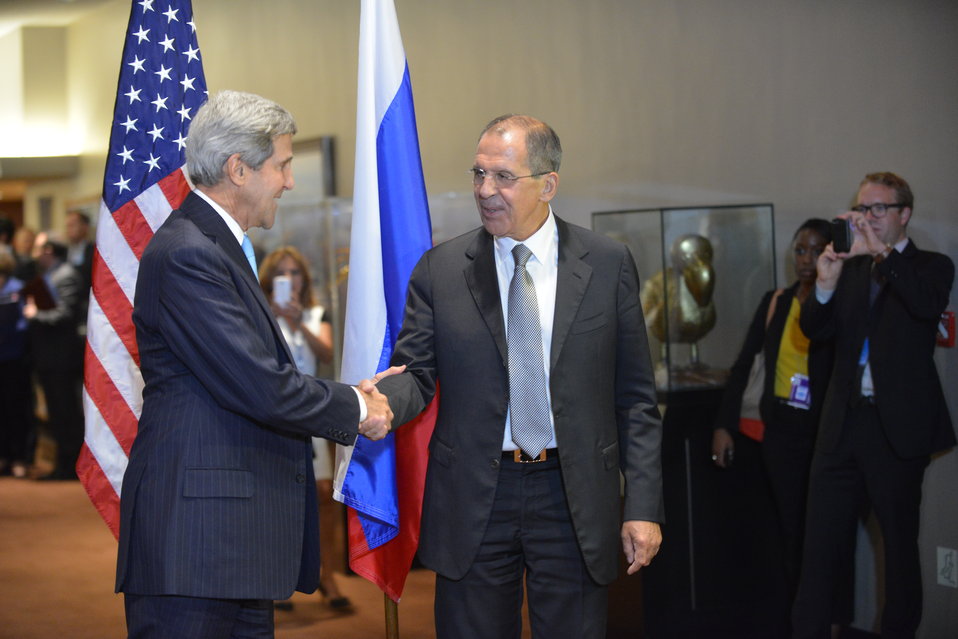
Secretary Kerry and Russian Foreign Minister Lavrov Shake Hands

U.S. Secretary of State John Kerry and Russian Foreign Minister Sergey Lavrov shake hands after their meeting at the United Nations in New York City on September 24, 2013.